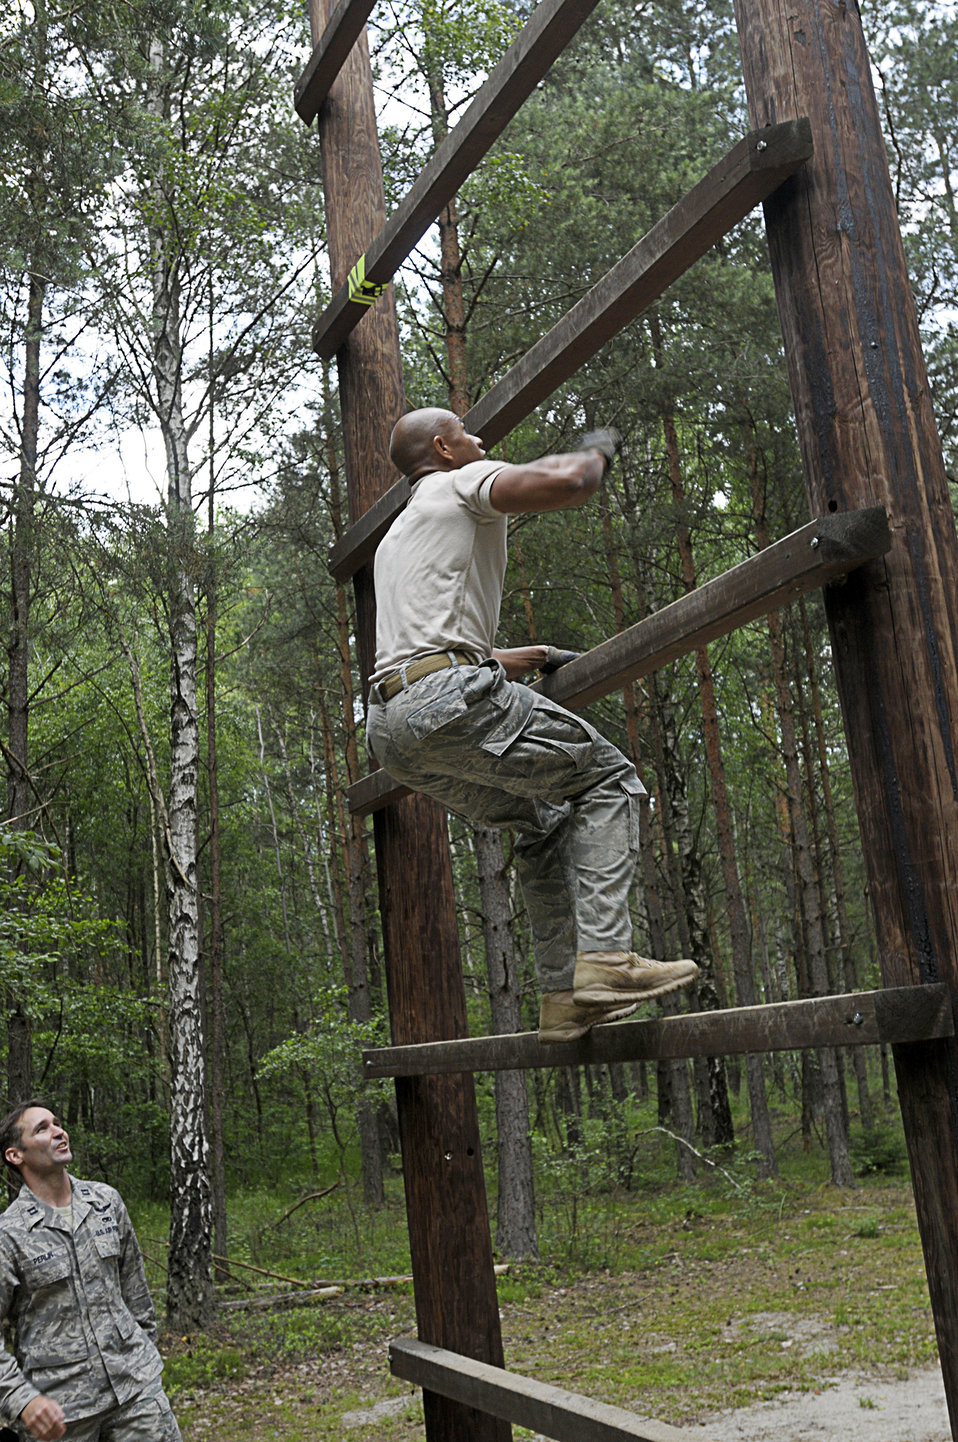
Allied Strike 2011

Tech. Sgt. Peter Davey participates in an obstacle course competition June 23, 2011, as part of Allied Strike at Grafenwoehr Training Area, Germany. Sergeant Davey is assigned to the 8th Air Support Operations Squadron.